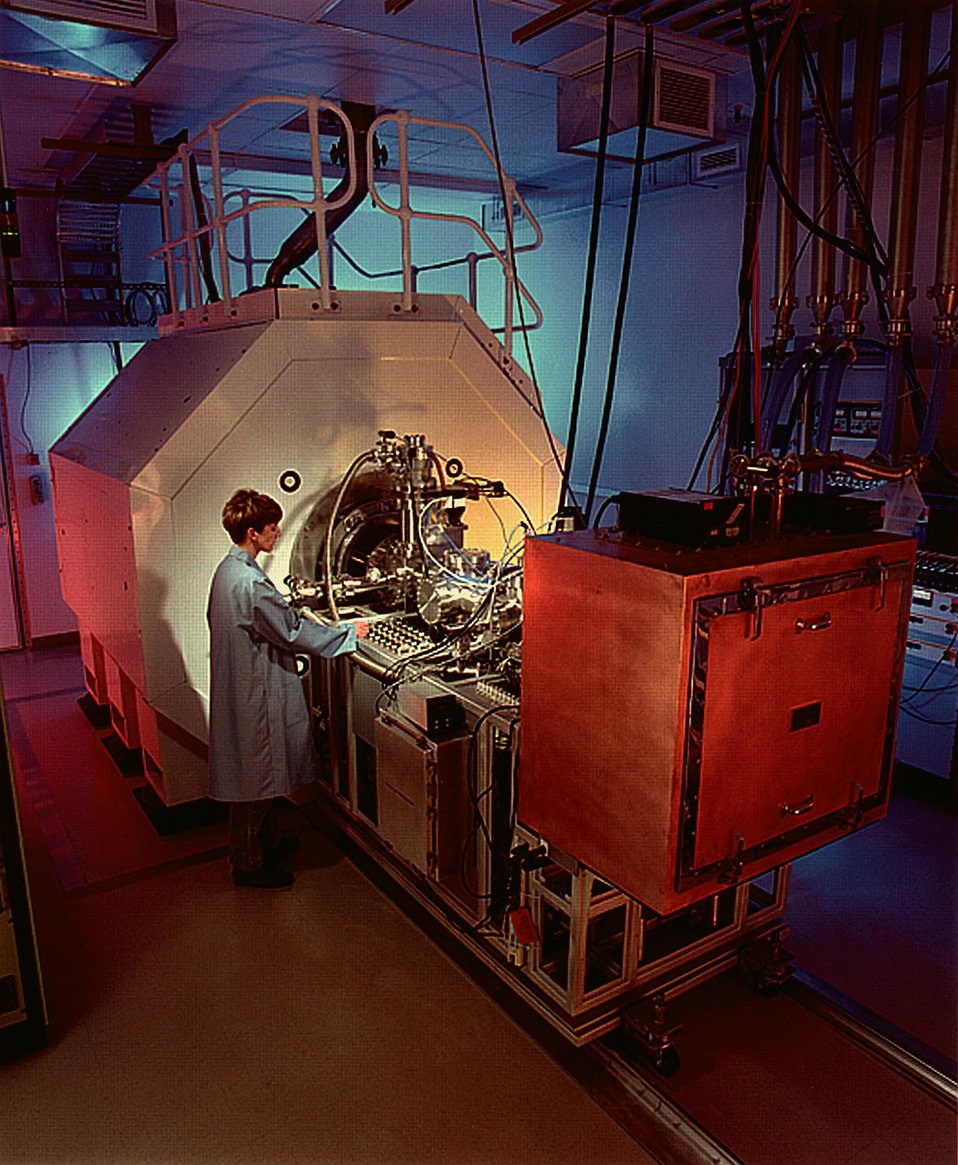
THE 11.5 TESLA FOURIER TRANSFORM ION CYCLOTRON RESONANCE (FTICR) MASS SPECTROMETER.

THE FTICR MASS SPECTROMETER IS SEEN IN PNNL'S WILLIAM R. WILEY ENVIRONMENTAL MOLECULAR SCIENCES LABORATORY, HIGH FIELD MASS SPECTROMETRY FACILITY. THE FTICR MASS SPECTROMETER IS USED FOR BIOCHEMICAL APPLICATIONS, SUCH AS COMBINATORIAL CHEMISTRY AND SEQUENCING.